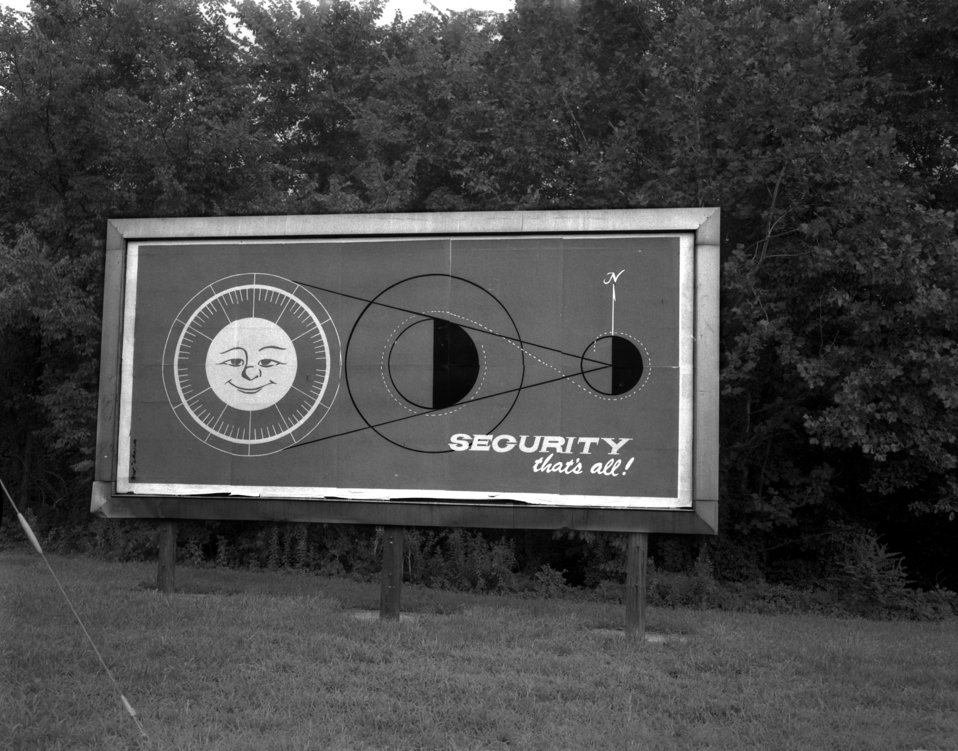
Security Billboard Oak Ridge

70-234 DOE photo Frank Hoffman

Security Billboard Aug. 1970 Oak Ridge Tennessee